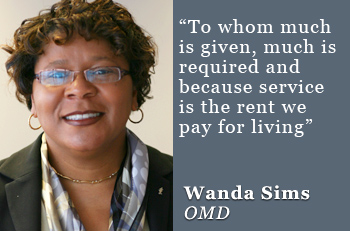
Wanda Sims

'To whom much is given, much is required and because service is the rent we pay for living.'